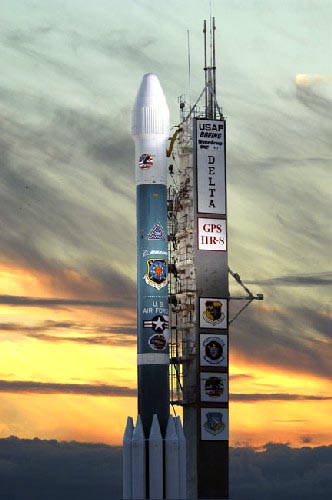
Rocket features 9-11 artwork

CAPE CANAVERAL, Fla. -- A Delta II rocket with the